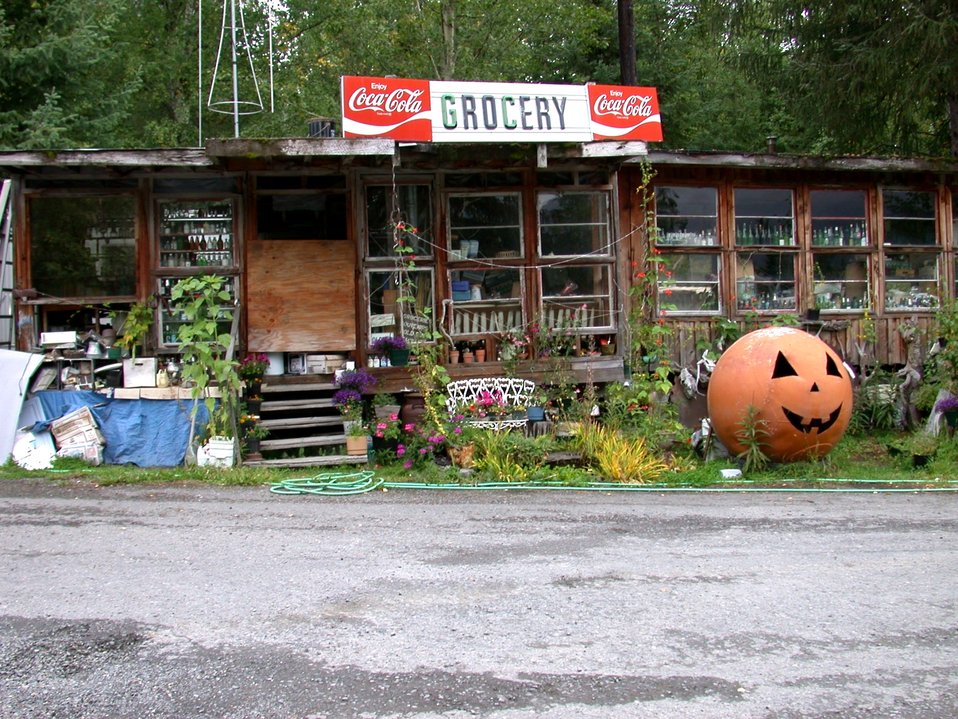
Local grocery store in Seward area.